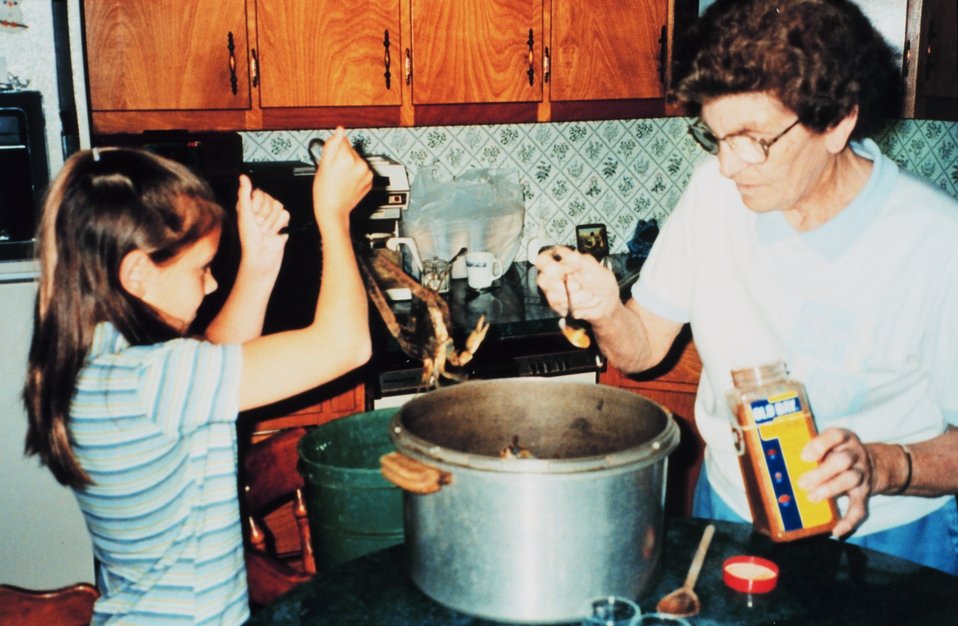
Preparing Maryland Blue Crabs for the dinner table. Passing on the knowledge of the Chesapeake Bay from generation to generation.